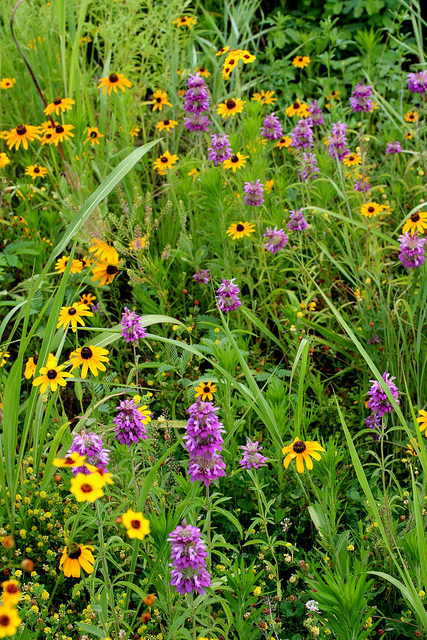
prairie blooms